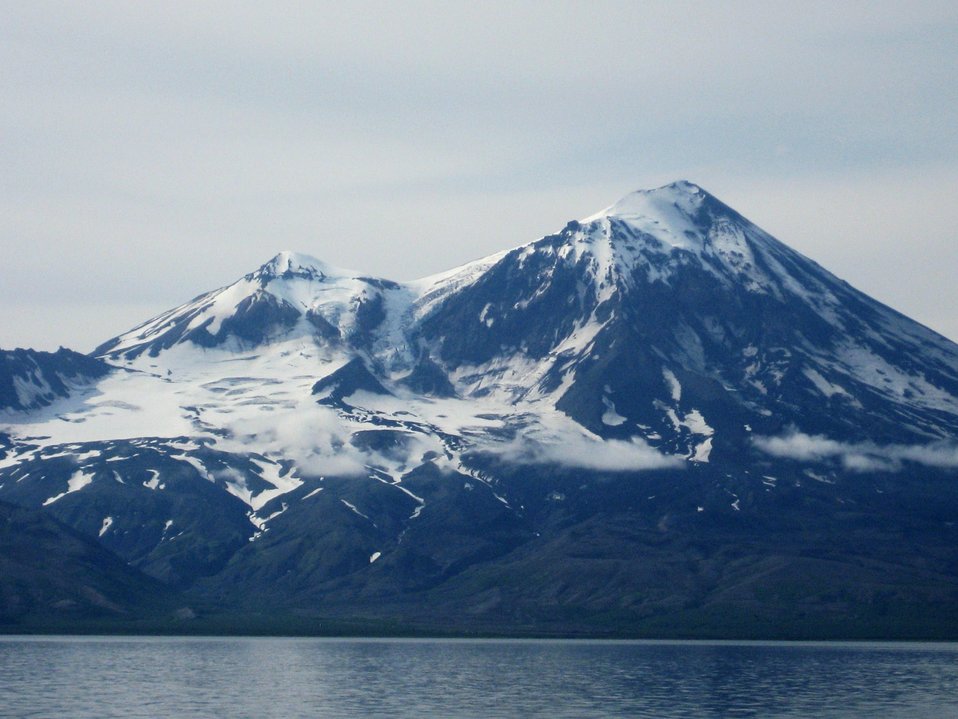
Pavlof Volcano as seen from Cold Bay area.